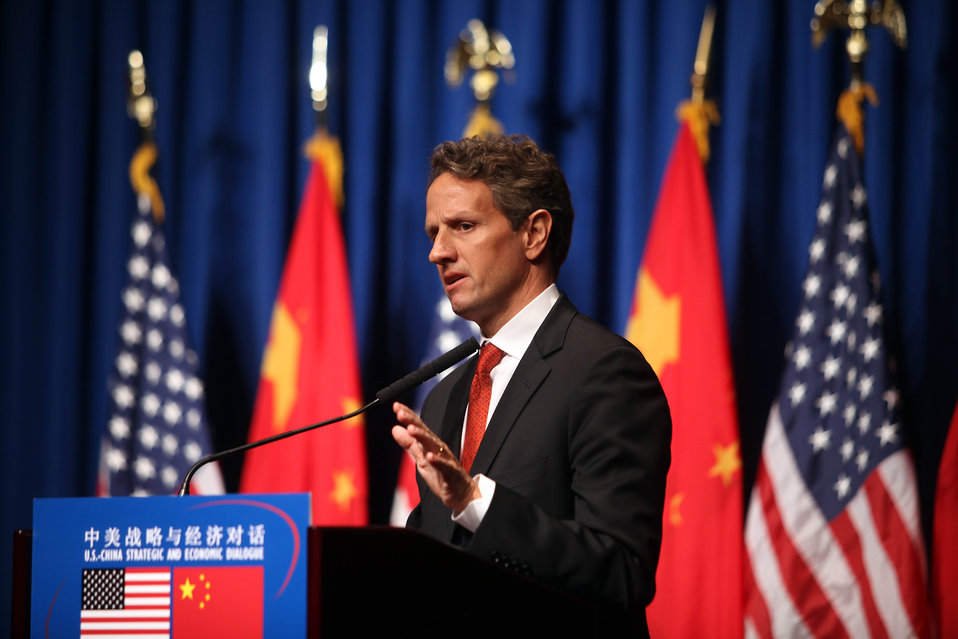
SandED 5/25/10

Secretary Geithner spoke at a press conference at the Grand Hyatt Hotel in Beijing.